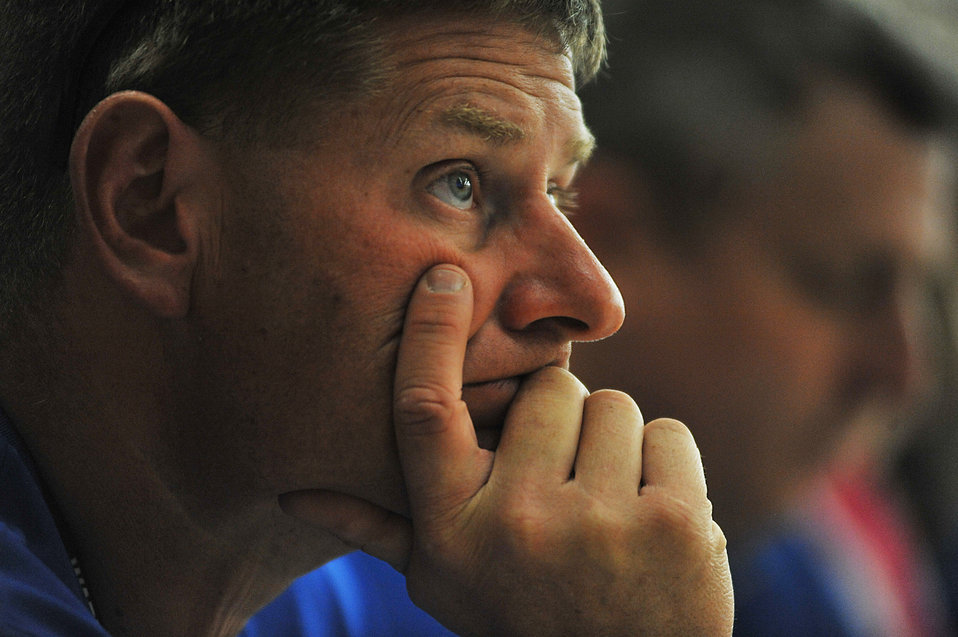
Warrior Games

U.S. Air Force Maj. Scott Bullis watches as his temamates compete in the finals of a shooting competition during Warrior Games 2012 at the Olympic Training Center in Colorado Springs, Colo., May 3, 2012. Bullis is with the Air Force team.